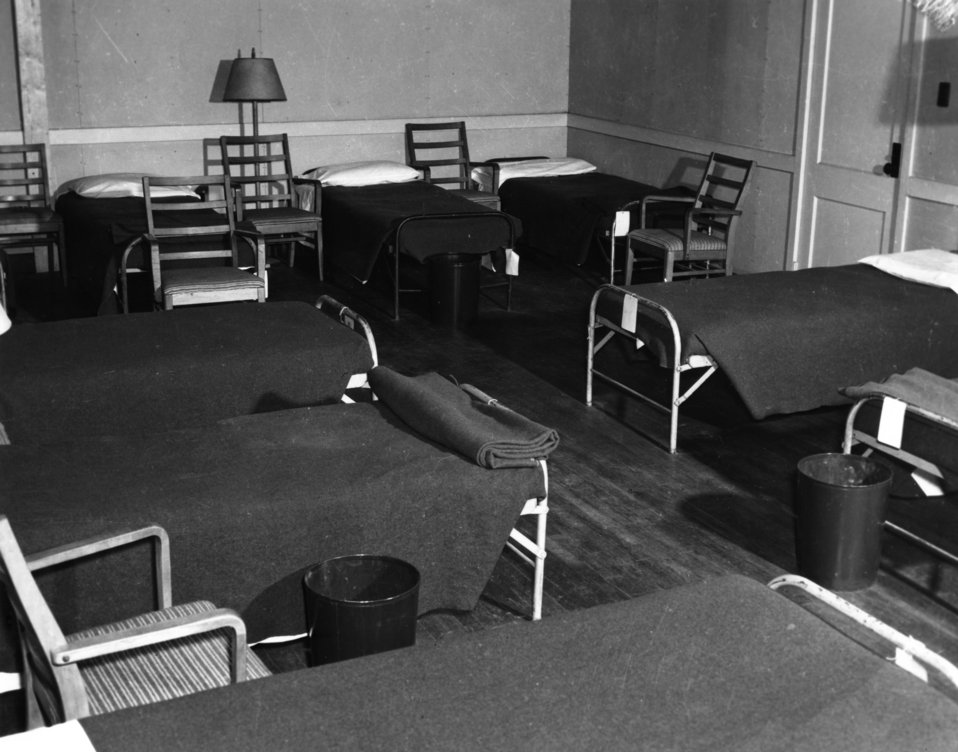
Housing at Oak Ridge